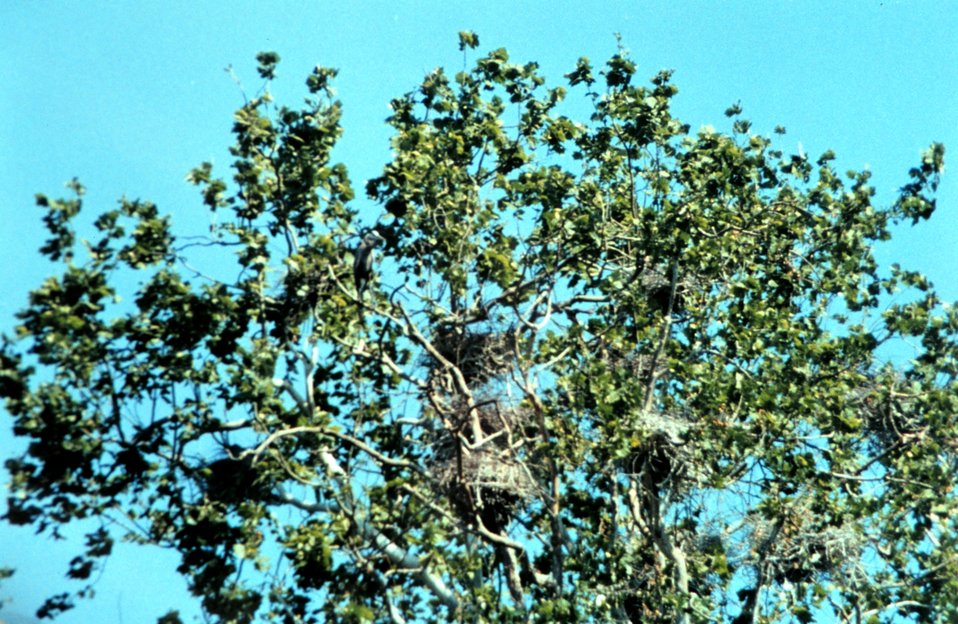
A Patuxent River Great Blue Heron nesting site, or 'heronry.'